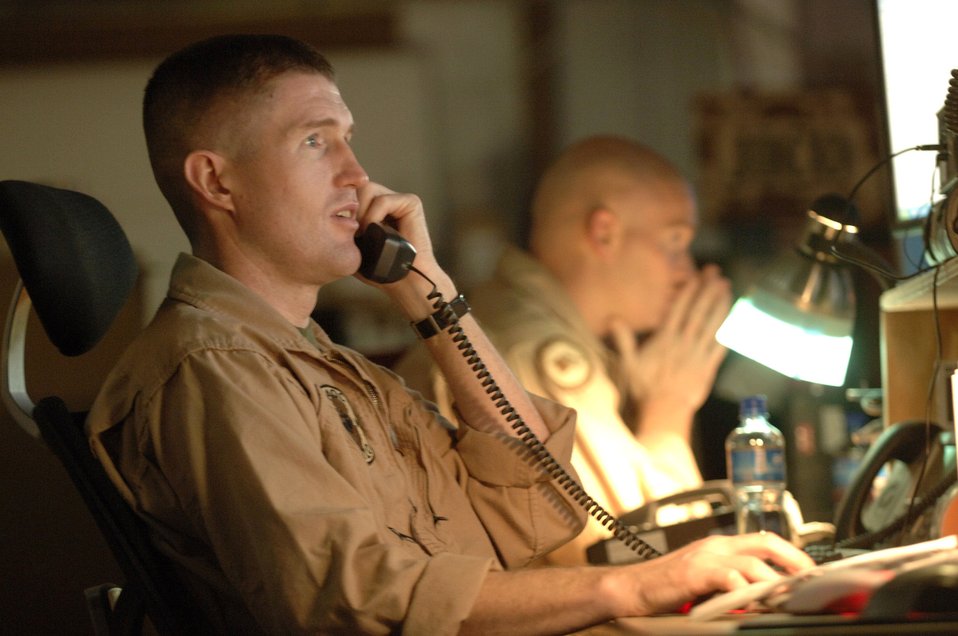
Sibling tanker pilots connect 7,700 miles from home

Inside the Combined Air Operations Center, Marine Capt. Jason Torbensen coordinates with an Air Force tanker unit downrange to arrange air refueling for a Marine Harrier aircraft flying a mission Nov. 25 over Iraq. Captain Torbensen is deployed for one year in Southwest Asia as the 3rd Marine Airlift Wing's liaison officer to the CAOC.